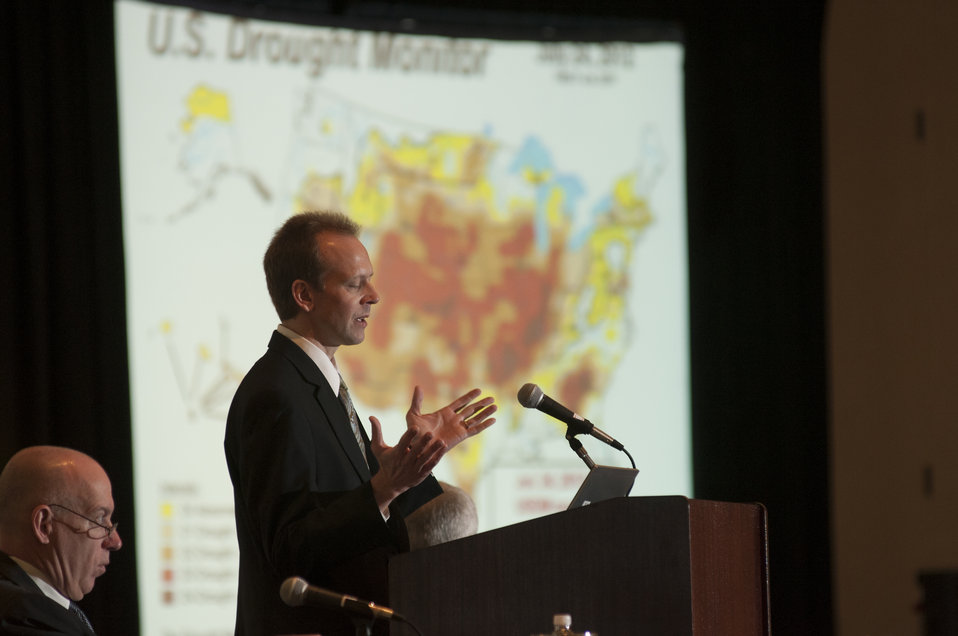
The U.S. Department of Agriculture (USDA) 2013 Agricultural Outlook Forum was held at the Crystal Gateway Marriott Hotel in Arlington, VA on Friday, Feb. 22, 2013. The breakout session on Grains and Oilseeds Outlook analyzed the metrological factors behind last summer’s historic drought, evaluated the effects of summer weather on corn and soybean yields, and provided the 2013 supply and demand outlook for wheat, corn, and soybeans.